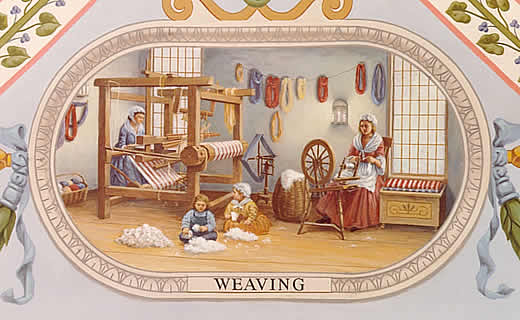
Weaving

EverGreene Painting Studios
Oil on Canvas
1993-1994
Cox Corridors

The craft is shown as a family operation, with children carding the wool, a young woman spinning it, and an older woman operating a loom.